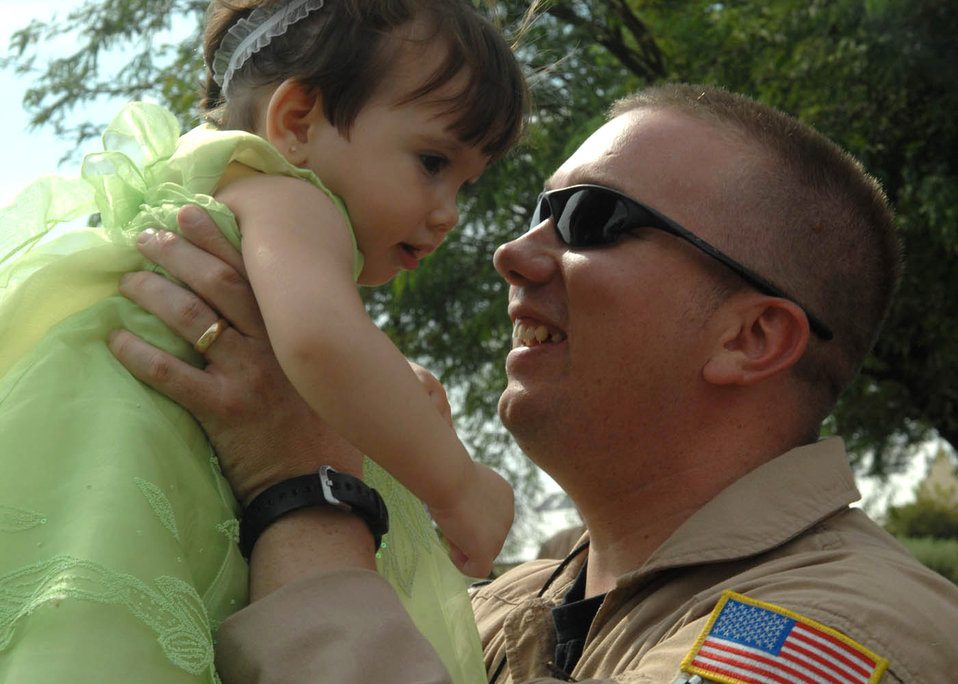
Hugs and kisses

Staff Sgt. Garry Gray hugs his 1-year-old daughter Jessica Denise as they are reunited July 9 after his return from a 120-day deployment to Balad Air Base, Iraq, at Davis-Monthan Air Force Base, Ariz. Sergeant Gray is an aerial gunner assigned to the 55th Rescue Squadron.